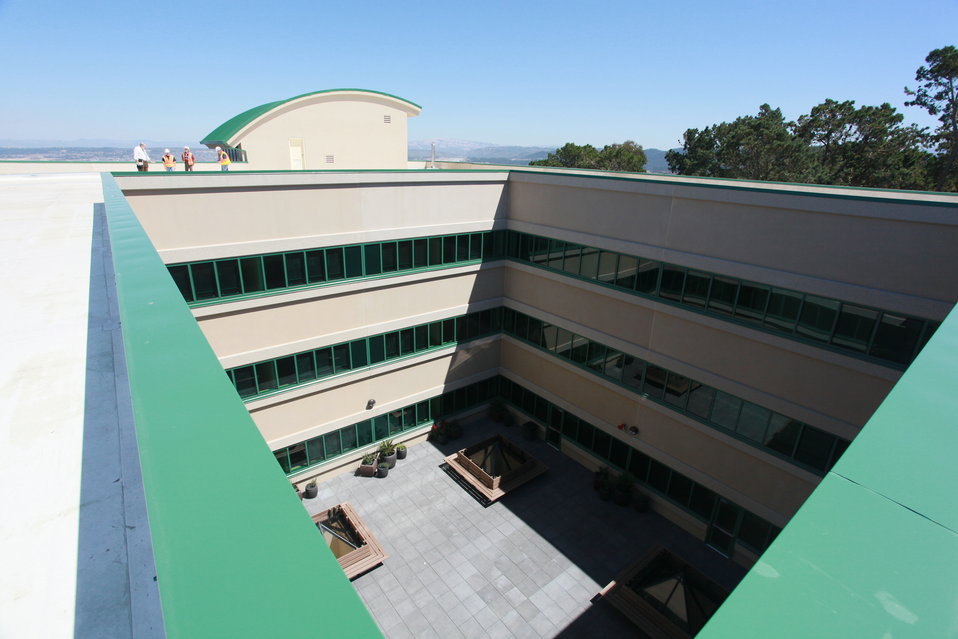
MONTEREY, Calif. (Sept. 21, 2010) - Rising above the hills of the Presidio of Monterey is the Defense Language Institute’s new general instruction building (GIB), completed in September by the U.S. Army Corps of Engineers Sacramento District.

The $28 million building will house 60 classrooms for military students learning foreign languages, the first of three scheduled for Corps construction to accommodate the growing DLI.